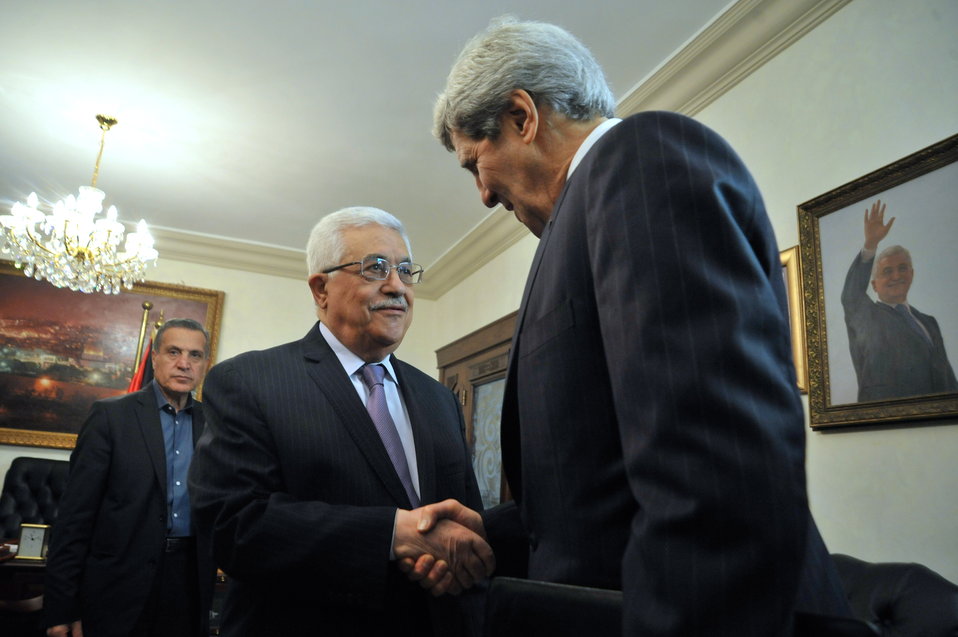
Secretary Kerry Meets With Palestinian Authority President Abbas

Palestinian Authority President Mahmoud Abbas greets U.S. Secretary of State John Kerry as he arrives for a meeting in Amman, Jordan, on June 29, 2013.